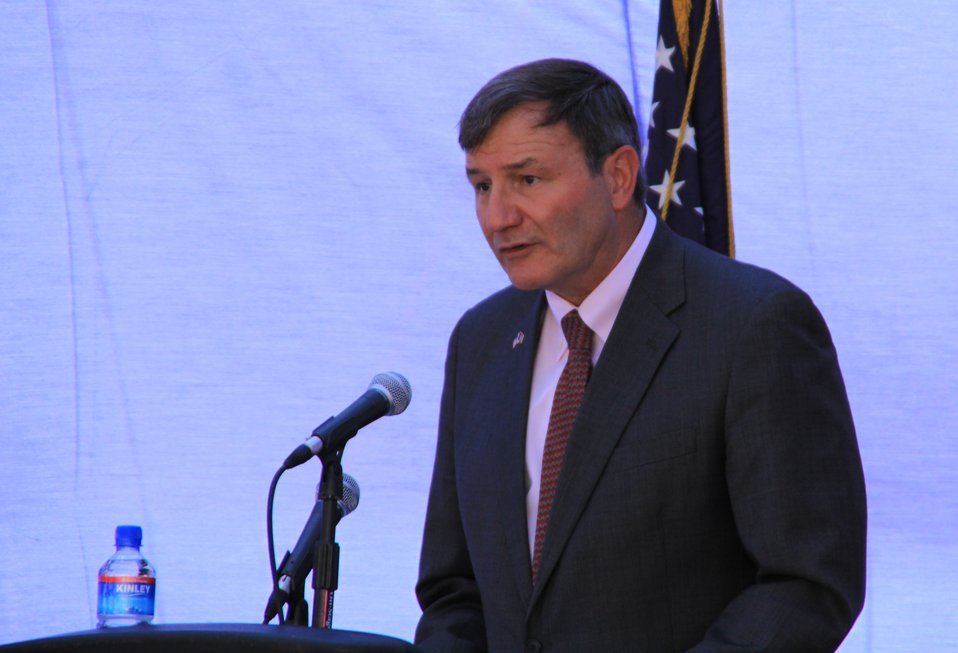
105 MW Tarakhil Power Plant Handover